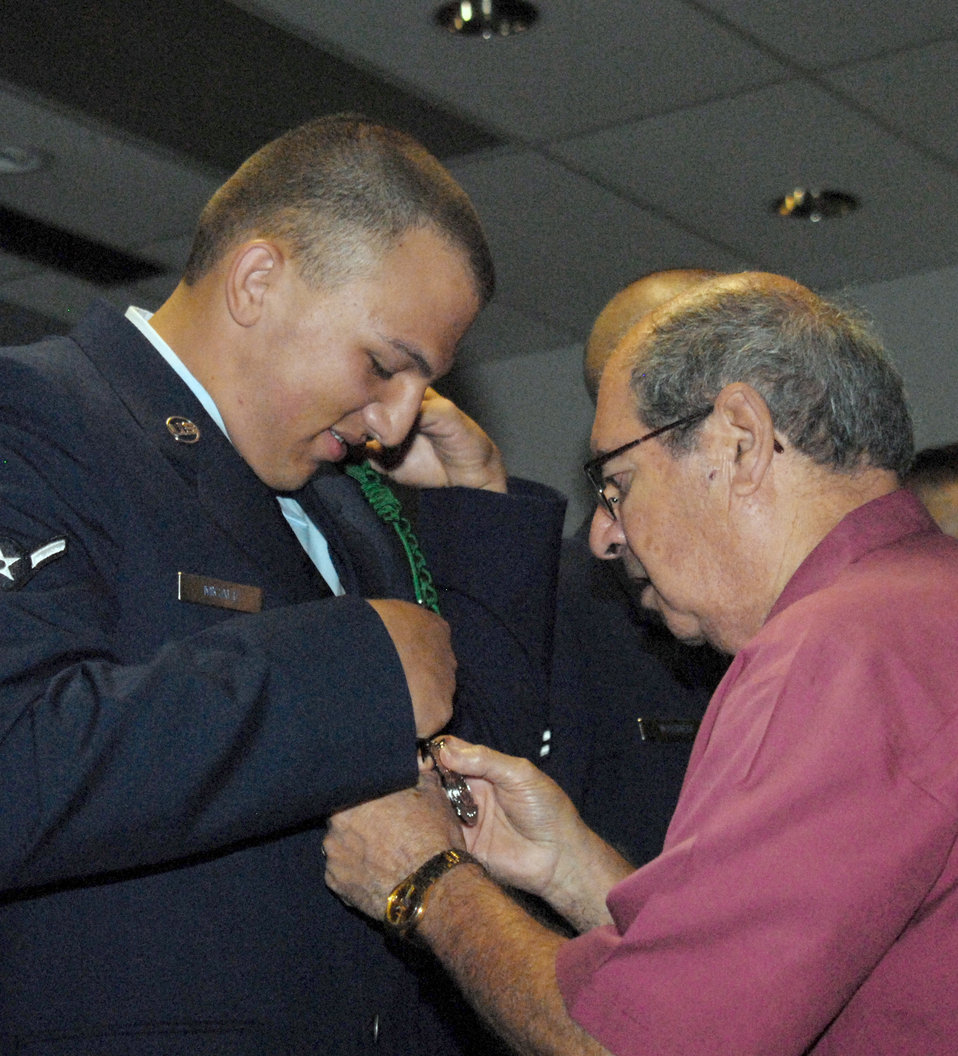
Three generations of excellence.

Airman 1st Class Laurence Micale watches as his grandfather, retired Col. Peter Micale III, pins on his new fire protection badge during the graduation ceremony July 1, 2010, at Goodfellow Air Force Base, Texas. Airman Micale is a third generation Air Force member with family ties going back to the start of the Air Force.